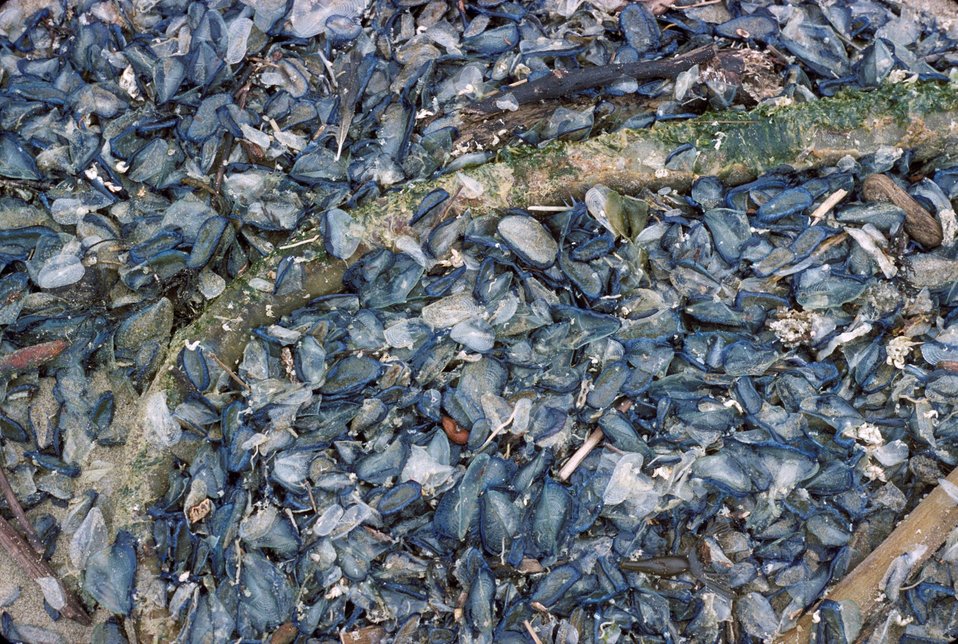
Point Reyes Great Beach. Velella velella - by-the-wind sailors washed ashore.